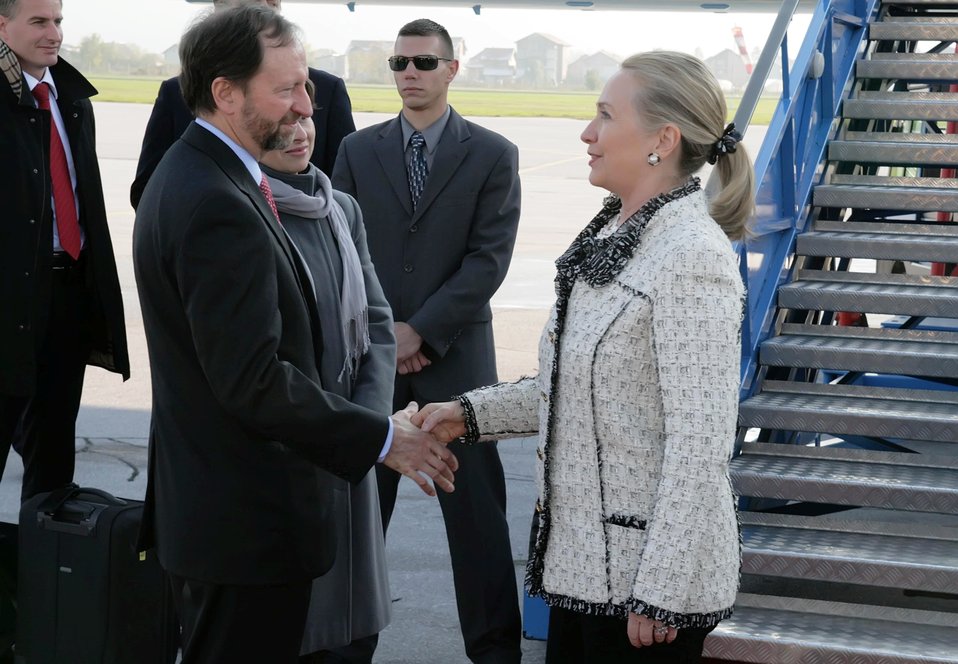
Secretary Clinton Shakes Hands With Ambassador Moon

U.S. Secretary of State Hillary Rodham Clinton shakes hands with U.S. Ambassador to Bosnia and Herzegovina Patrick Moon nd his wife Mrs. Danuta Moon before her departure from Sarajevo, Bosnia and Herzegovina, October 30, 2012.